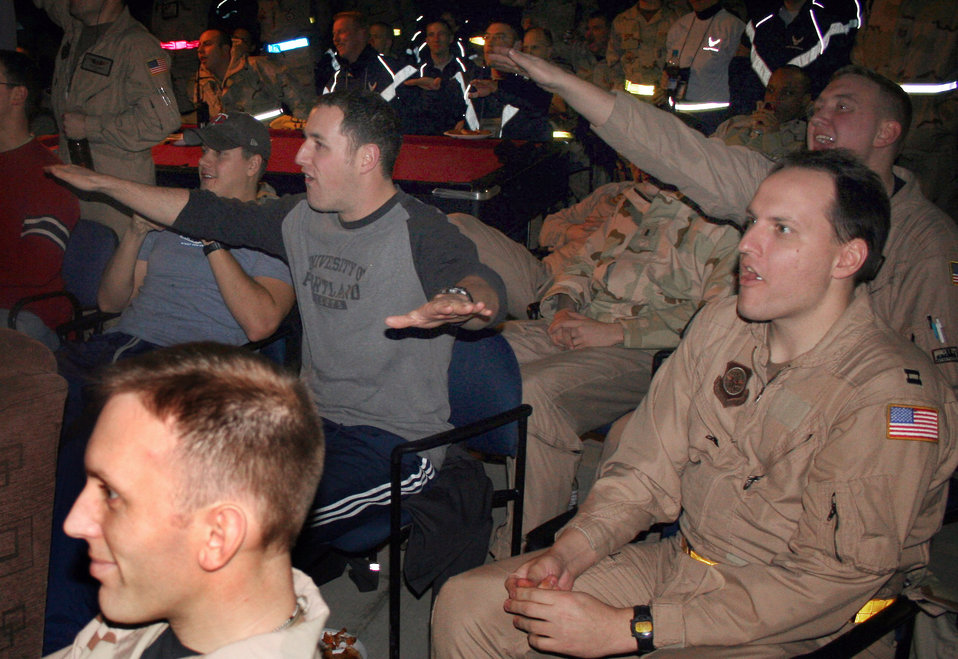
This can't be right

MANAS AIR BASE, Kyrgyzstan (AFPN) -- A C-17 Globemaster III crew disagrees with the referees after the Steeler's first touchdown in Super Bowl XL. Airmen here said they were disappointed to miss the parties at home, but glad to be on the ground for the game. The crew is with the 4th Airlift Squadron at McChord Air Force Base, Wash.